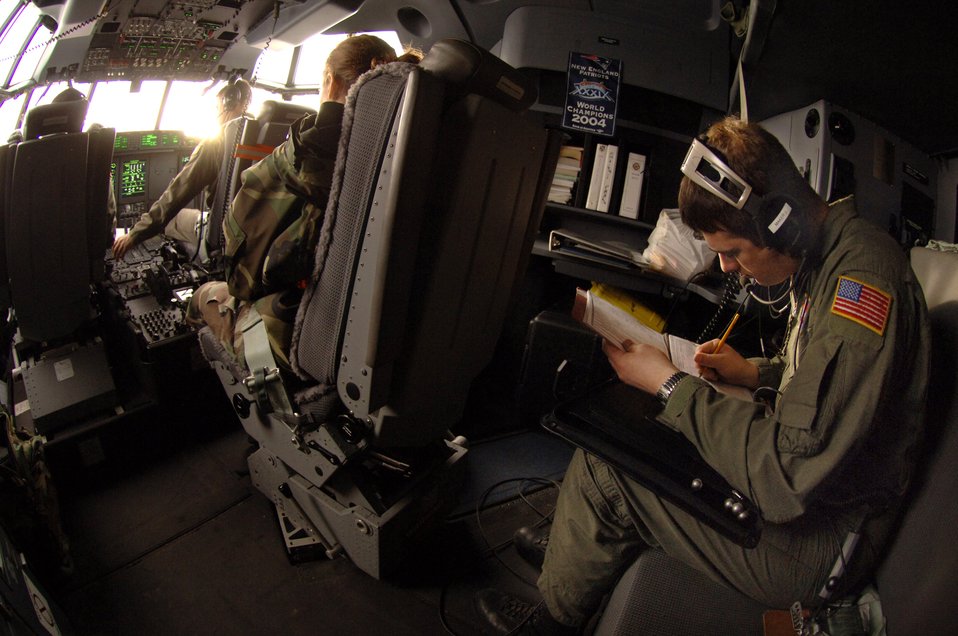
Total force provides seamless airlift support

Staff Sgt. Joseph Maker annotates weight and balance figures before a C-130 Hercules departs Jan. 9 from Ramstein Air Base, Germany. The six-member crew flying for the 38th Airlift Squadron flew to Aviano Air Base, Italy, where they picked up and deliver 25,000 pounds of cargo bound for Zaragoza Air Station, Spain, in support of an F-16 Fighting Falcon training exercise. Sergeant Maker is a Rhode Island Air National Guard loadmaster with the 143rd Airlift Wing at Quanset State Airport.